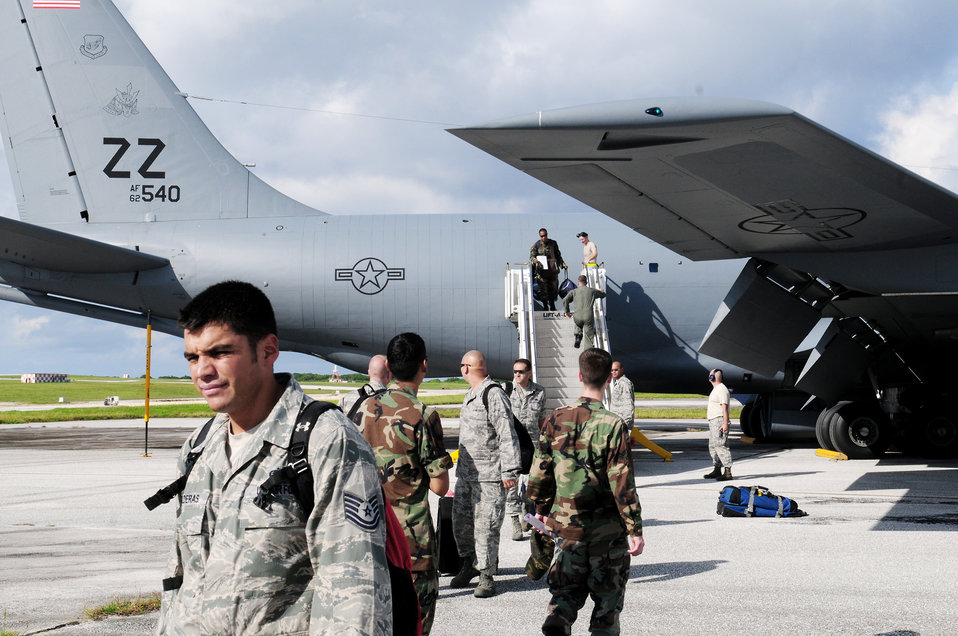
Kadena Airmen

Airmen from the 18th Wing at Kadena Air Base, Japan, arrive at Andersen Air Force Base, Guam, Aug. 31 as part of a test of the wing's deployment capabilities.